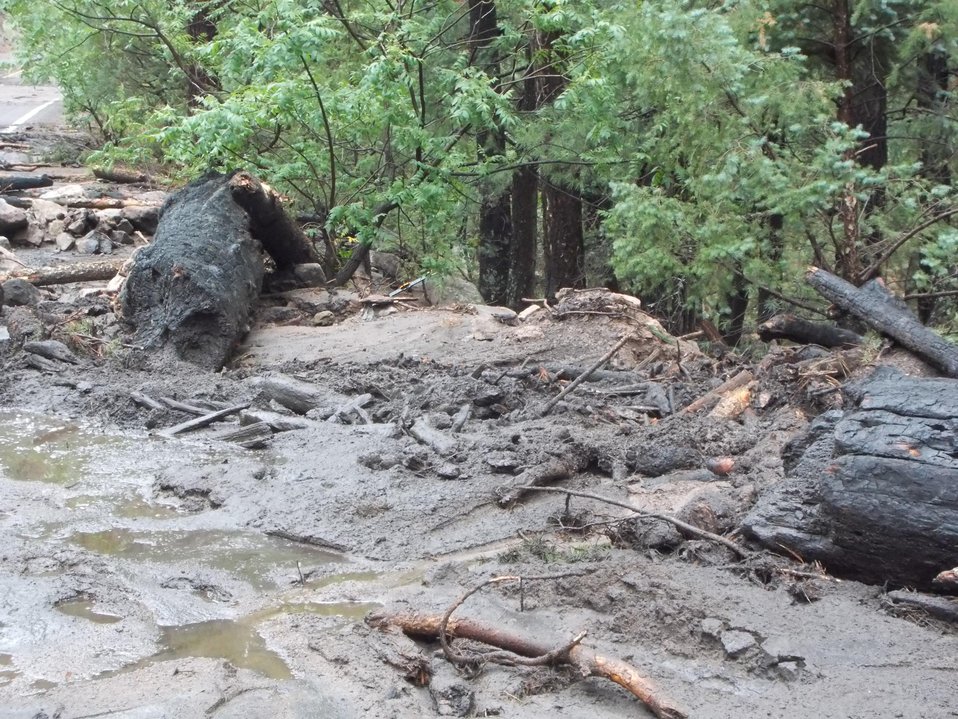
Debris is brought down to NM Hwy 152 after a thunderstorm due to the Silver Fire near Kingston, NM. The Silver Fire in Gila National Forest near Kingston, NM began on Jun. 7, 2013 by a lightning strike, has burned an estimated 138,705 acres and is 85% contained.